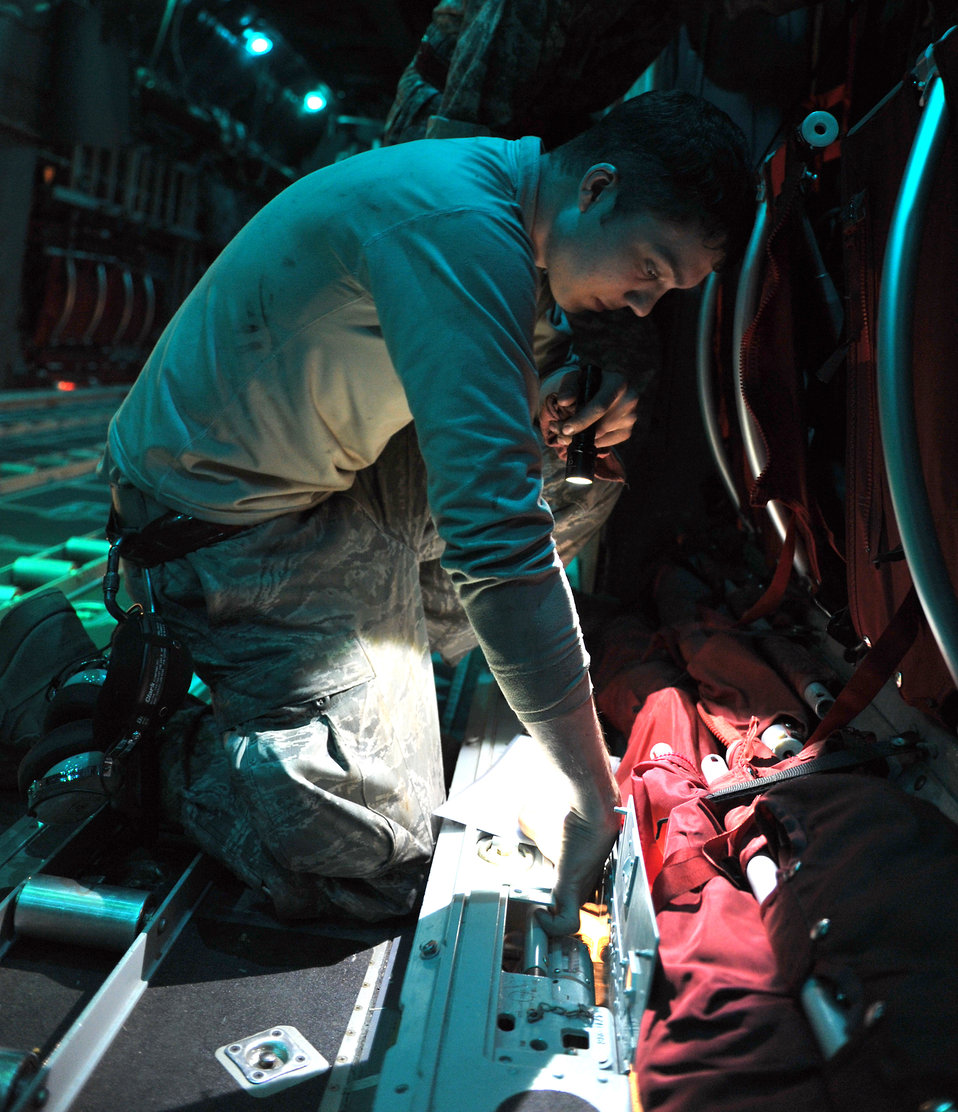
C-130 maintenance operations

Airman 1st Class Joshua Hoffman performs a preflight check on the loading panels of a C-130 Hercules March 24, 2011, at Little Rock Air Force Base, Ark. Airman Hoffman is a crew chief assigned to the 19th Aircraft Maintenance Squadron.